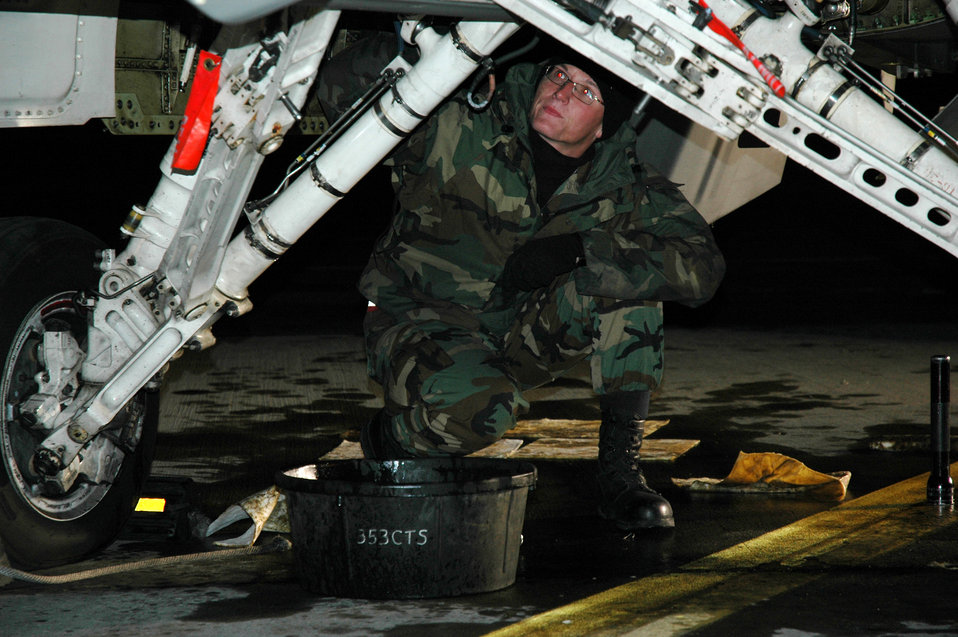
Maintainers keep Cope Thunder going

EIELSON AIR FORCE BASE, Alaska -- Senior Airman Deryck Griggs fixes an oil leak on his F-16 Fighting Falcon. The Airman, from the 52nd Aircraft Maintenance Squadron, Spangdahlem Air Base, Germany, is taking part in exercise Cope Thunder 06-1, which ends Oct. 21. Some 1,000 active duty and Air National Guard Airmen and 87 aircraft are taking part in the exercise. Pacific Air Forces hosts the two-week air combat training exercise.